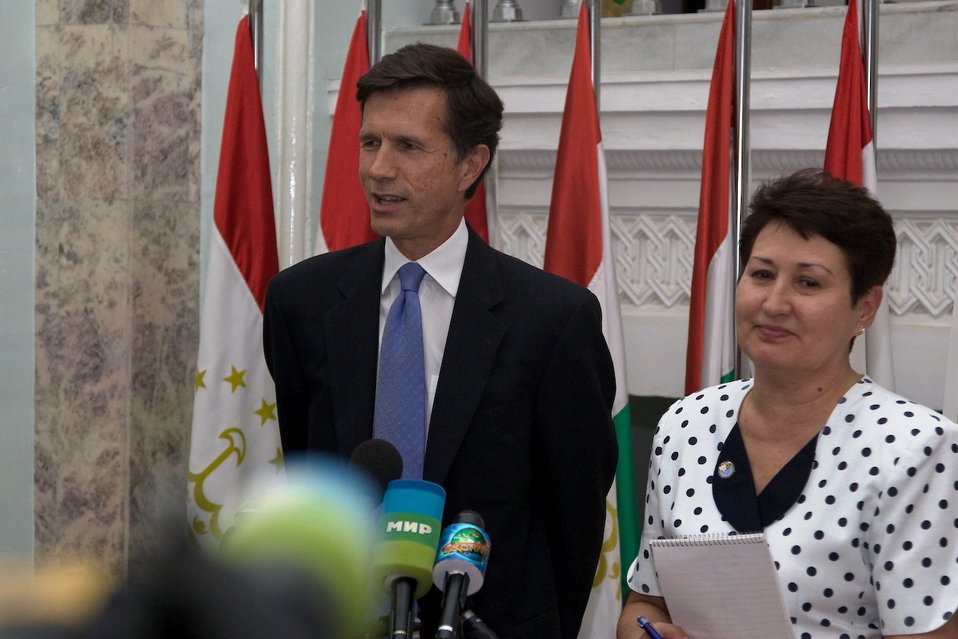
Assistant Secretary Blake Visits Taijkistan

U.S. Assistant Secretary of State Robert O. Blake visits Dushanbe, Tajikistan, on September 1, 2010.